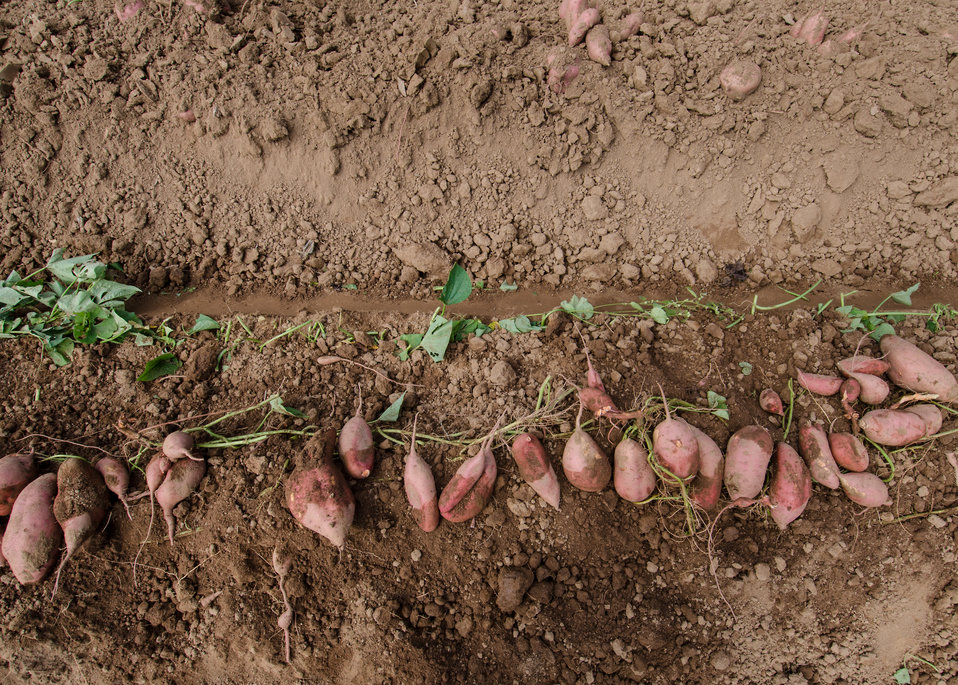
Harvested hand picked large sweet potatoes, at Kirby Farms in Mechanicsville, VA on Friday, Sept. 20, 2013. 200 acres of the farm are devoted to eggplant, spinach, beets, tomato, jalapeno peppers, melons and a variety of greens. Soybeans and small grain are grown on the remaining 300 acres. Using rotational crop practices allows Kirby Farms to double and triple crop yields. Wholesalers, who buy from this farm, sell the produce to major supermarkets in the Mid-Atlantic region, from North Carolina to Maryland. Restaurants in the local area prepare and serve the local bought produce to patrons in the Richmond, VA metropolitan area.